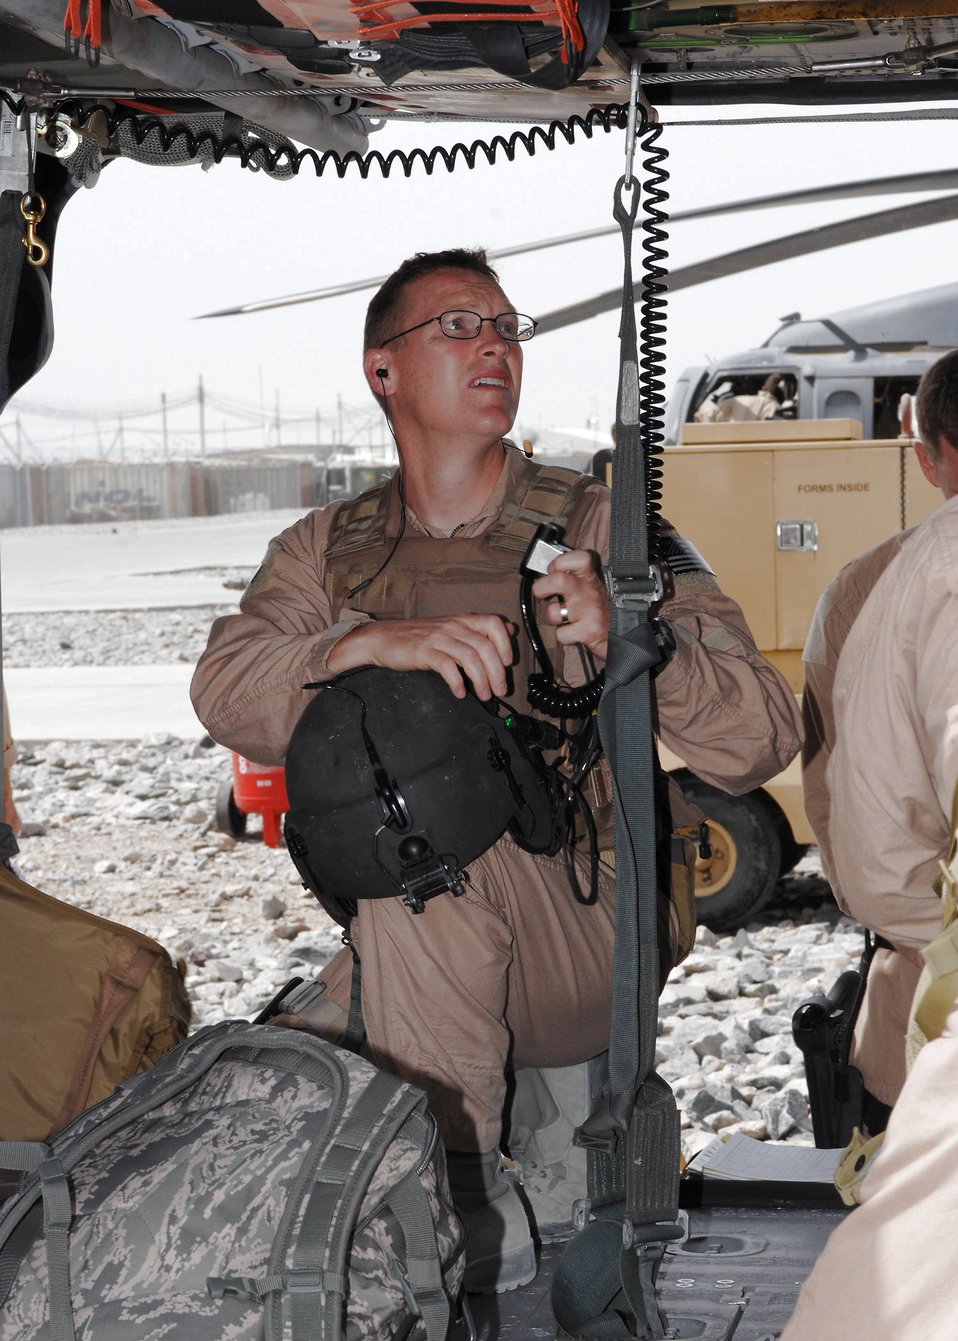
305th ERQS outside the box

Maj. John Buterbaugh, a doctor assigned to the 305th Expeditionary Rescue Squadron at Kandahar Air Field, Afghanistan, prepares his gear for a mission during an alert call March 31. Major Buterbaugh is deployed from the 306th Rescue Squadron at Davis-Monthan Air Force Base, Ariz.